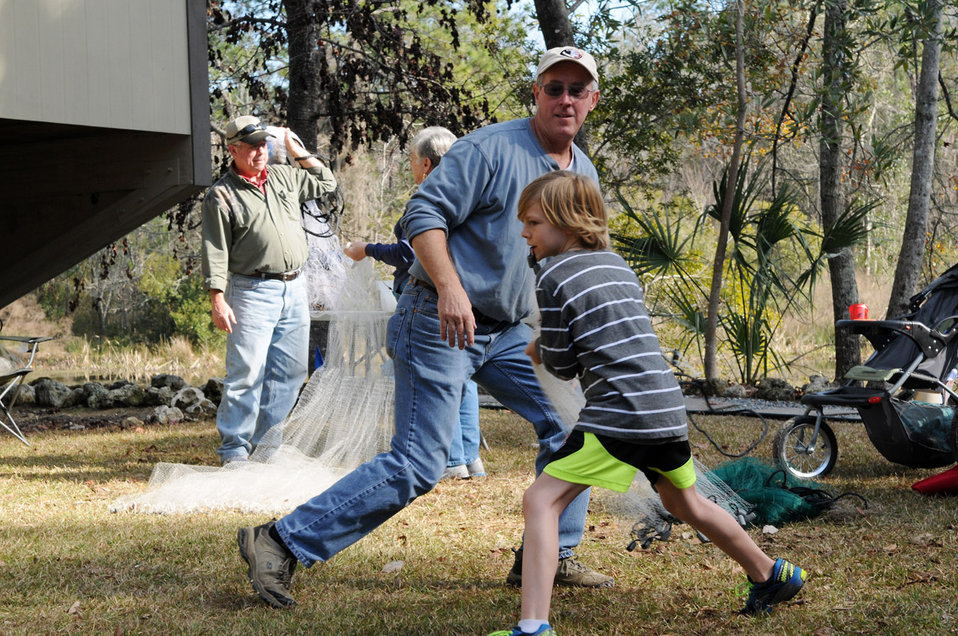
Young person throws cast net

St. Marks NWR 2014 WHO Festival. February 1, 2014.
A variety of exhibitors provided opportunities for festival goers to learn about ways to enjoy outdoor recreation.